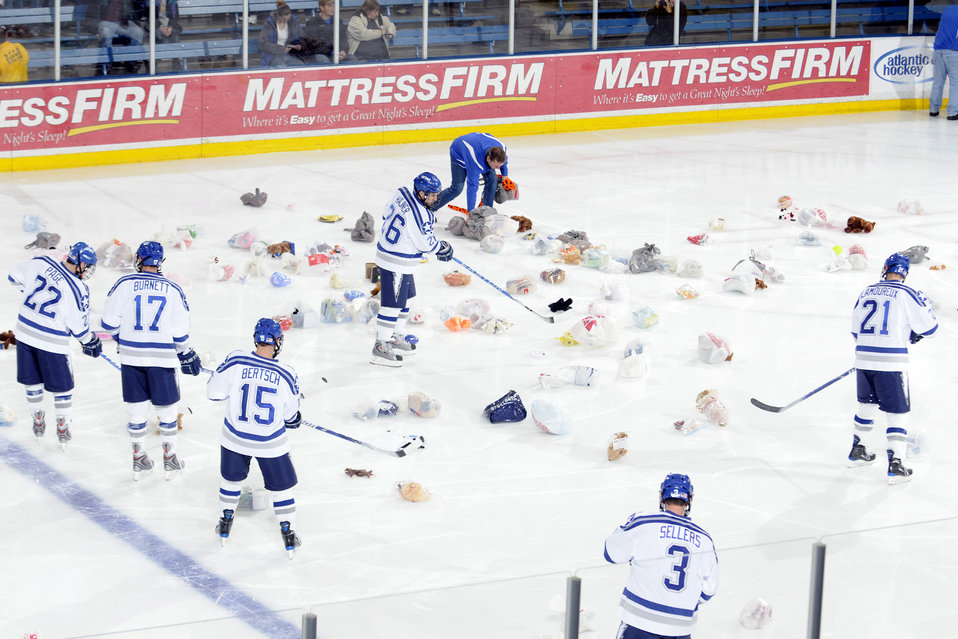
Falcons sweep hockey series

U.S. Air Force Academy Falcons collect toys after the Falcons score their first goal during the game against American International College at the Cadet Ice Arena Dec. 5, 2009. This is the 10th year that the Air Force Hockey team has done the toy trick, where fans throw toys onto the ice after the first score. The toys are given to children in local hospitals and clinics during the holiday season. During the passt nine years the team has distributed more than 5,000 toys. Air Force also collected a victory, defeating AIC 6-2.